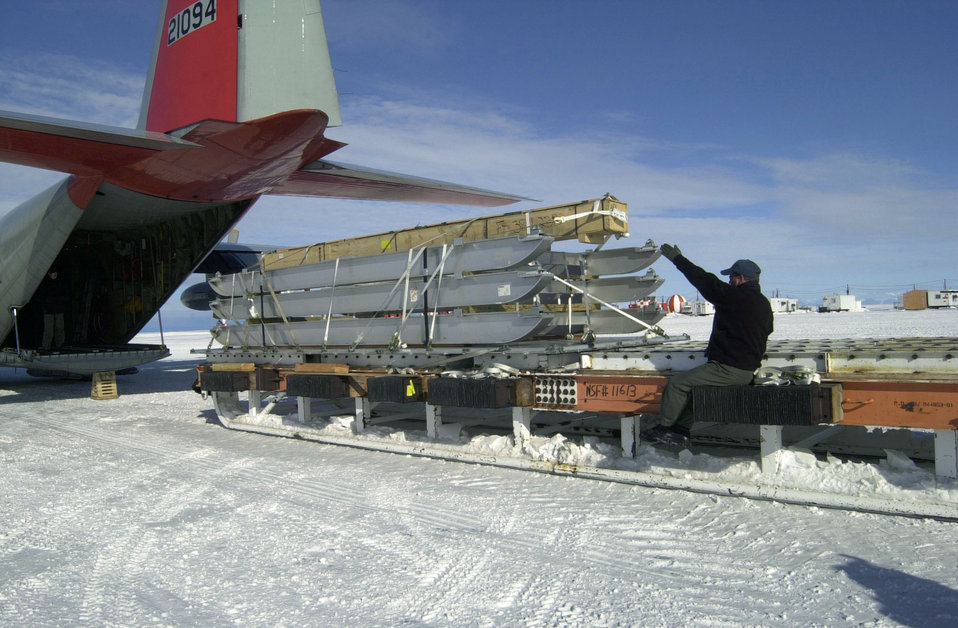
Air Guard retraces first flight to South Pole

MCMURDO STATION, Antarctica -- Master Sgt. Carmello Modesto loads equipment sleds destined for the U.S. Antarctic Program's South Pole research station into the back of an LC-130 Hercules here. The cargo plane, from the New York Air National Guard's 109th Airlift Wing, took the long way to the pole to retrace the route of the first South Pole flight by Rear Adm. Richard E. Byrd 75 years ago.